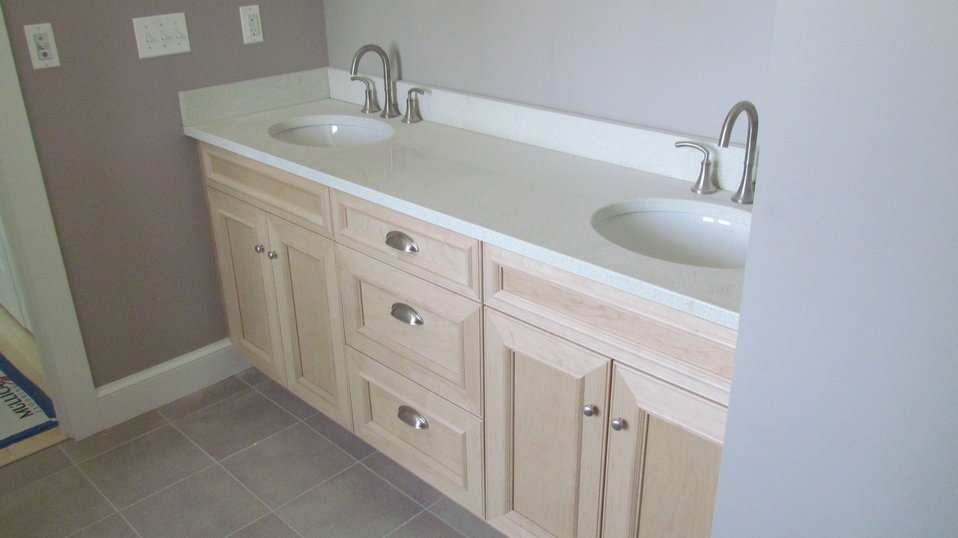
Vanity and sink installed in master bathroom.